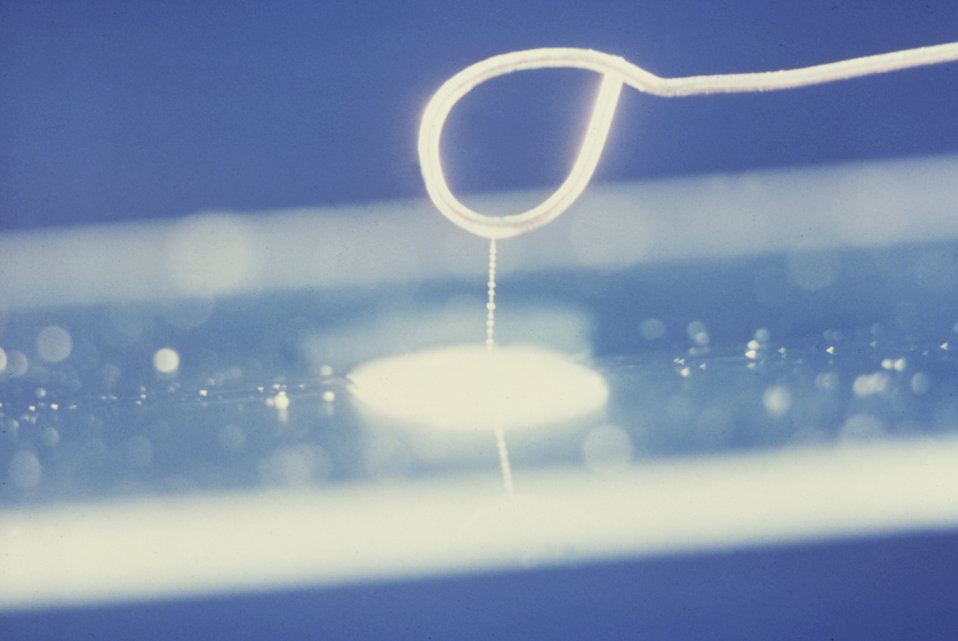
This photograph depicts a close-up of a 'string test' being performed on a droplet of sample that was harvested from a Petri dish growing suspected colonies of Vibrio cholerae bacteria. Note the mucoid 'string' still clinging to the wire inoculating loop.